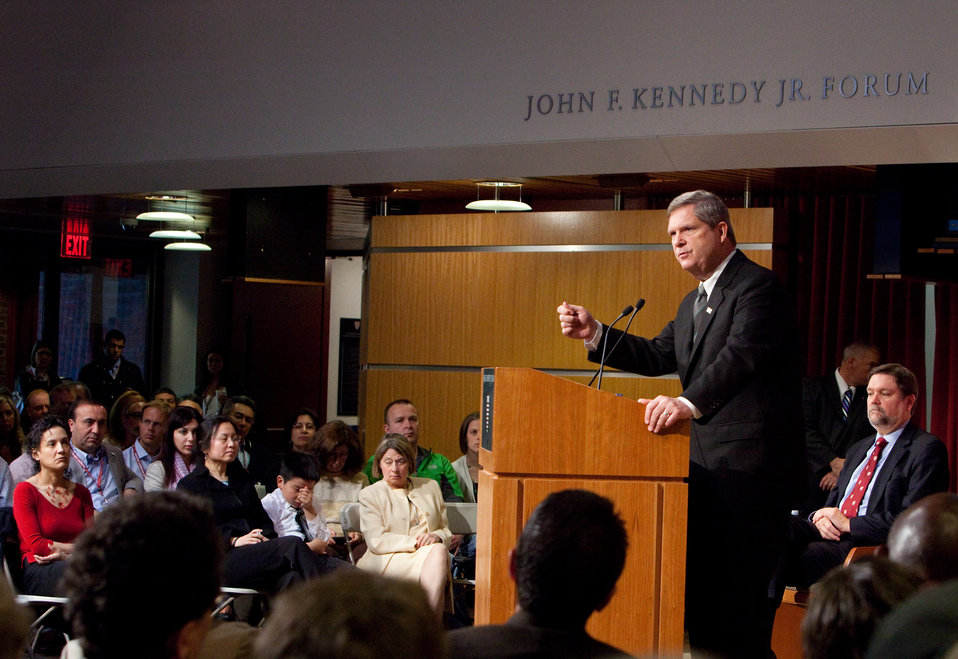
Agriculture Secretary Tom Vilsack speaking at the John F. Kennedy School of Government, at the John F. Kennedy, Jr., Forum at Harvard University in Boston, MA, on Sunday, May 15, 2011.